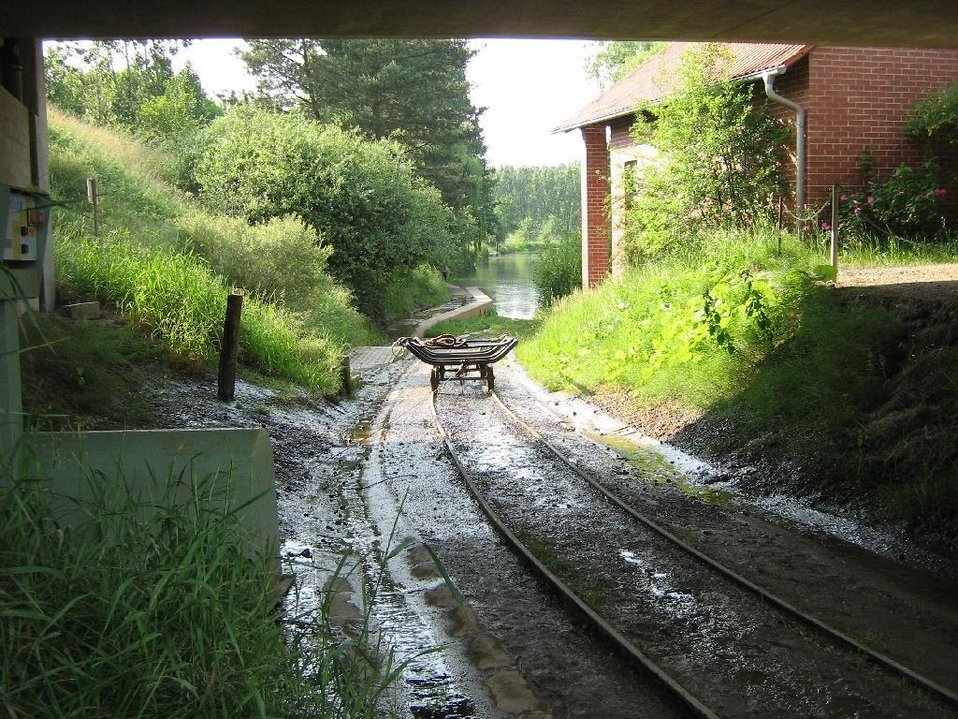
Deutsch: Der Dahme-Umflutkanal in Märkisch-Buchholz. Bootswagen zur Überwindung des Wassergefälles (Landkreis Dahme-Spreewald, Brandenburg)